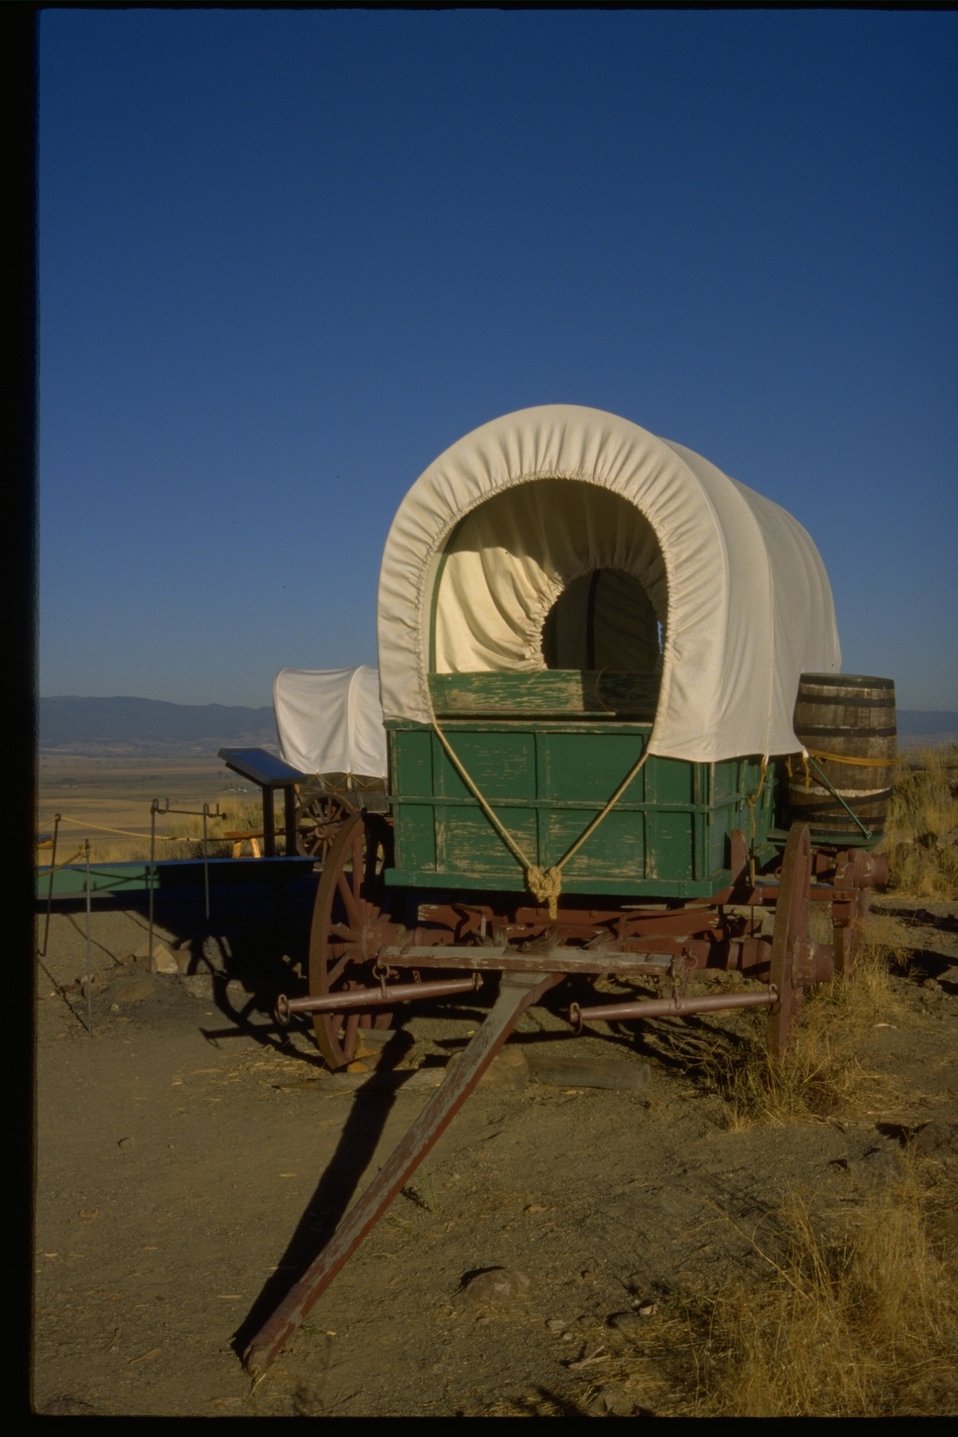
Wagons outdoors near the NHOTIC.